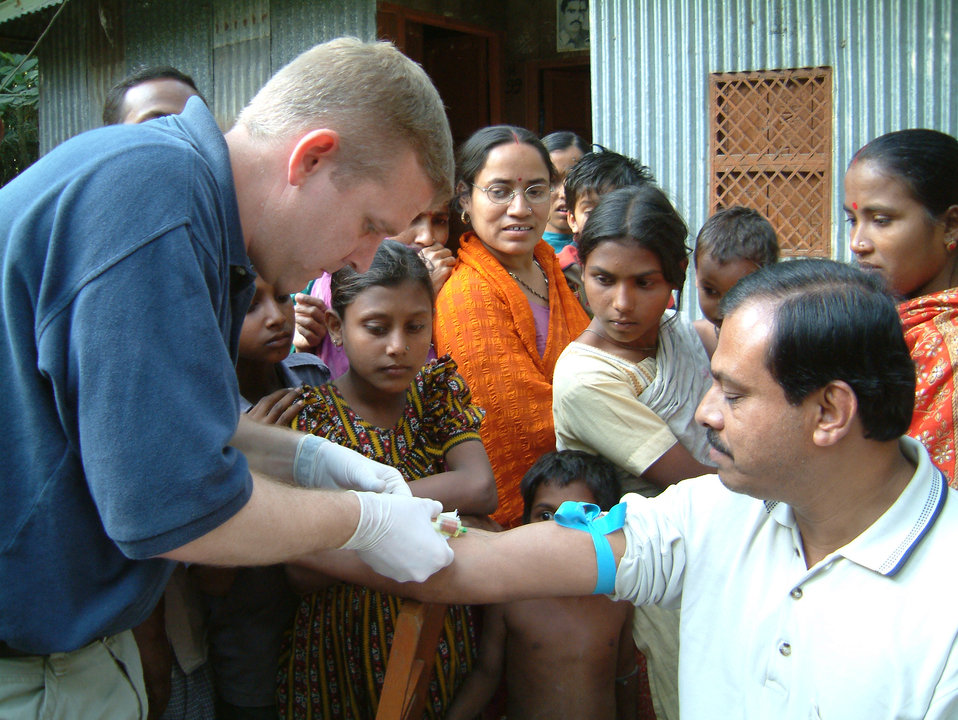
This 2002 photograph shows Centers for Disease Control (CDC) Epidemic Intelligence Service (EIS) officer Joel Montgomery, Ph.D., M.Sc., as he was drawing blood samples in a Bangladesh village. Dr. Montgomery was responding to an outbreak of Nipah virus encephalitis.